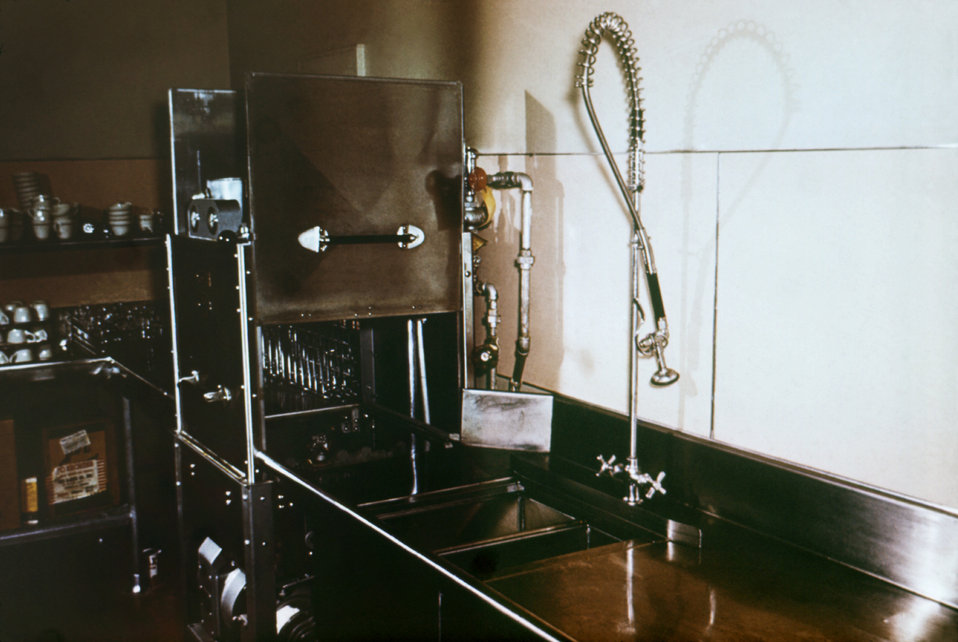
This photograph shows the proper installation of a manual pre-rinse sprayer on a dishwashing machine above its water spill rim.